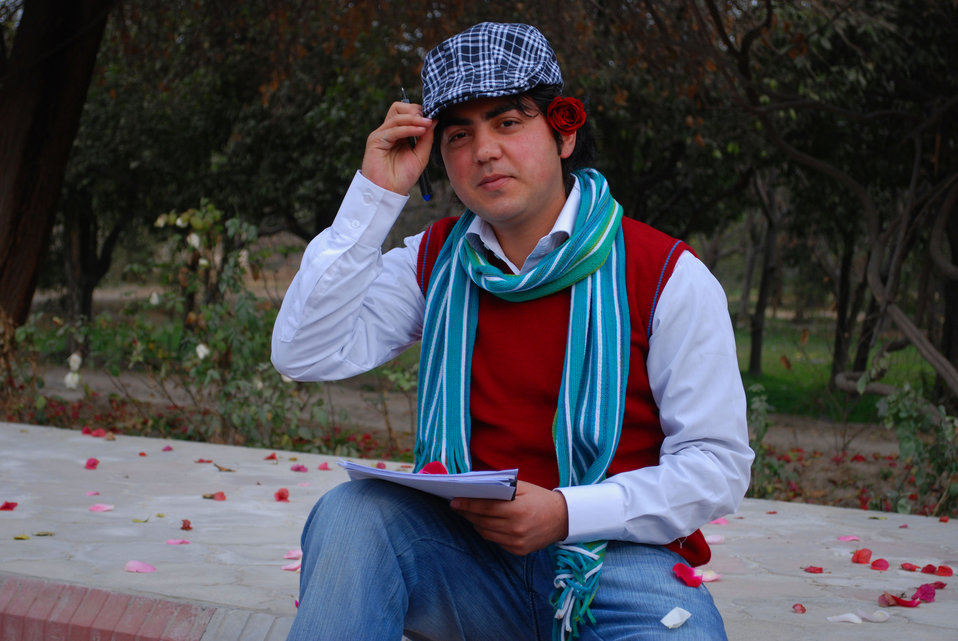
'On the Road' in Nangarhar Province